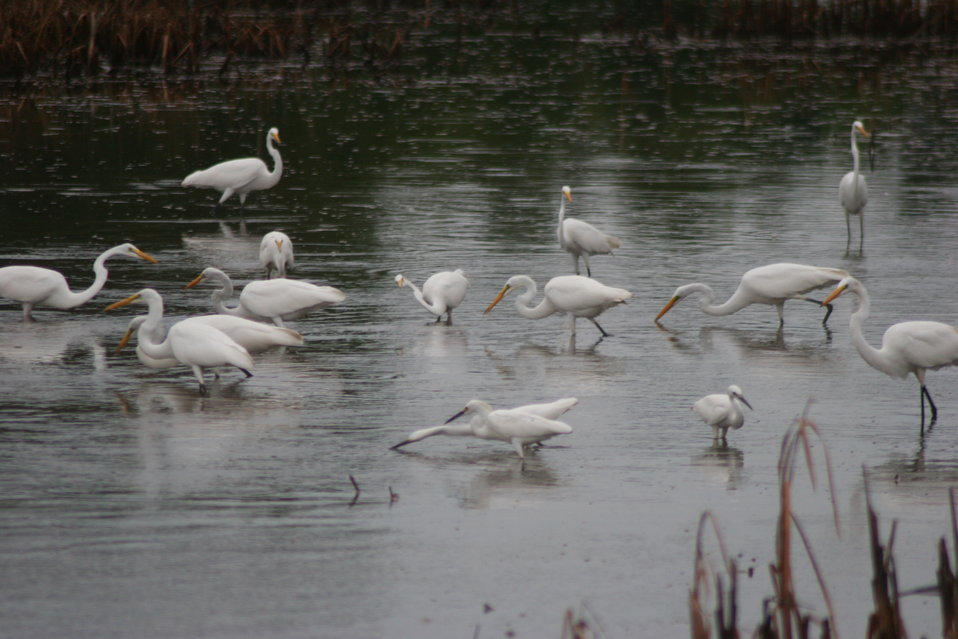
Egrets Feeding in the Marsh